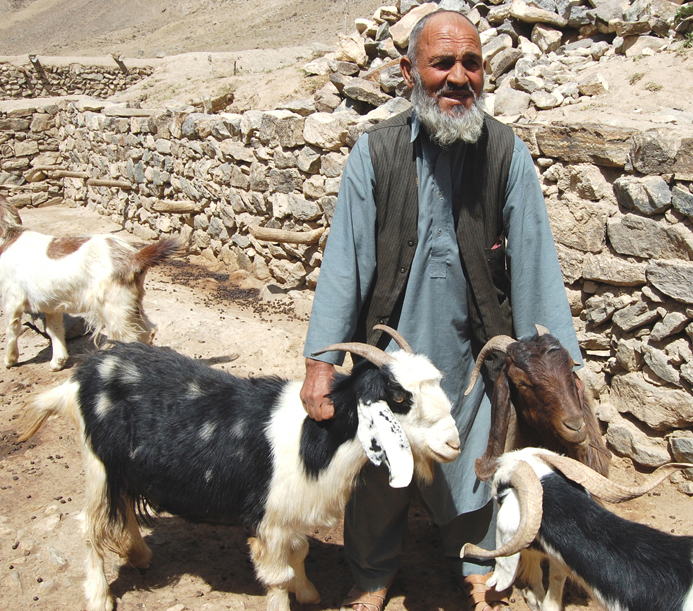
Khodaar